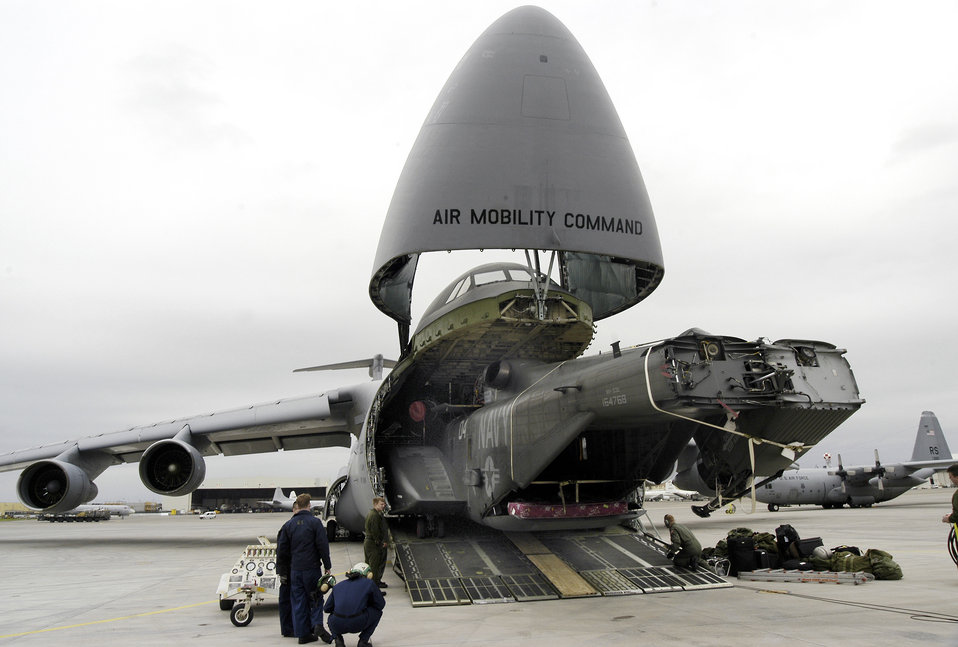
Galaxy lifts Sea Dragon

SIGONELLA NAVAL AIR STATION, Sicily -- A Navy MH-53E Sea Dragon is unloaded from a C-5 Galaxy here March 14.